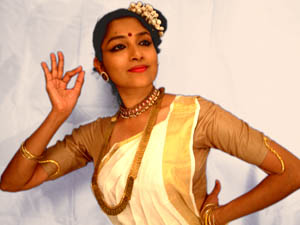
Category:Mohiniyattam